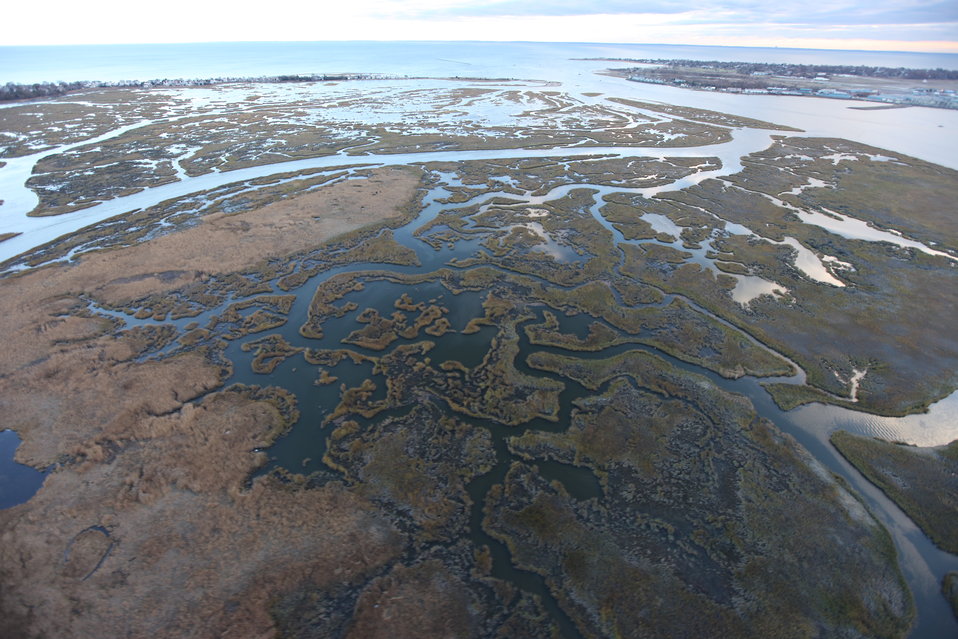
Stewart B. McKinney NWR-Milford Point (CT)

Aerial view of Milford Point in the aftermath of storm Sandy.